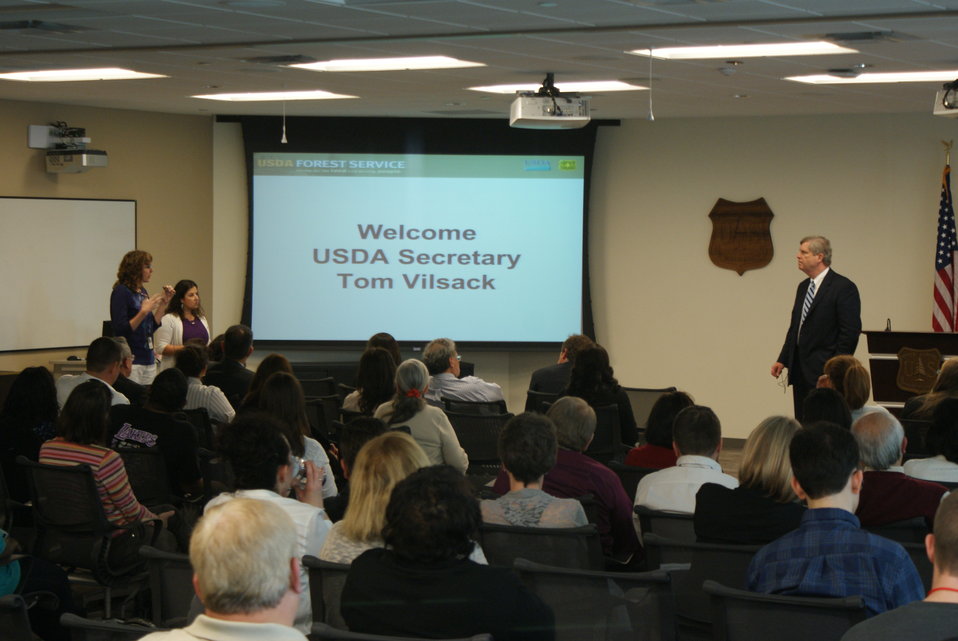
Agriculture Secretary Tom Vilsack holds a town hall meeting with U.S. Department of Agriculture (USDA) employees at the Albuquerque Service Center in Albuquerque, NM on Mar. 10, 2014. USDA photo M. Chavez.